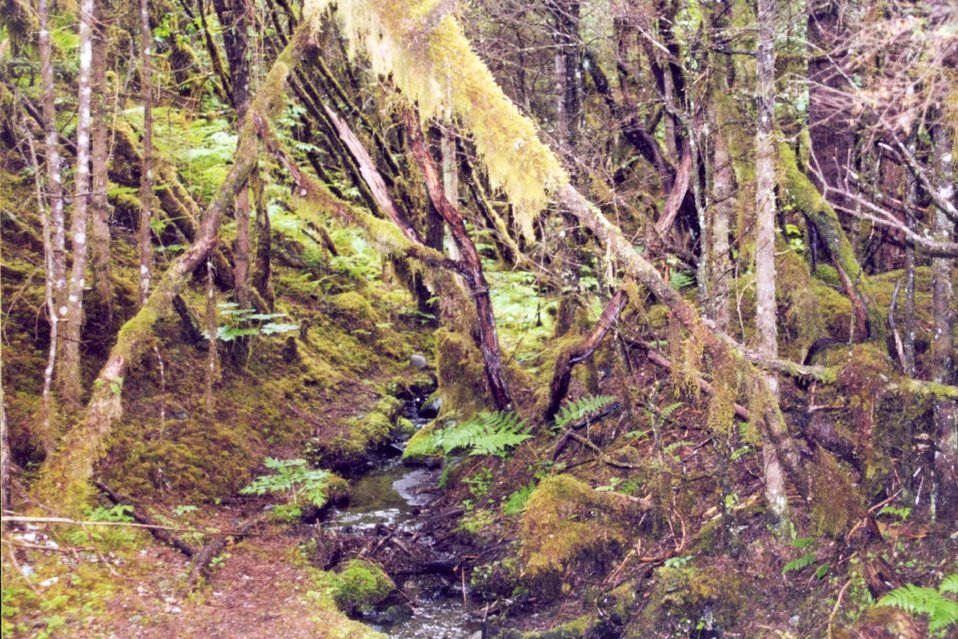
Moss on trees showing tremendous rainfall. I wonder which way is north.